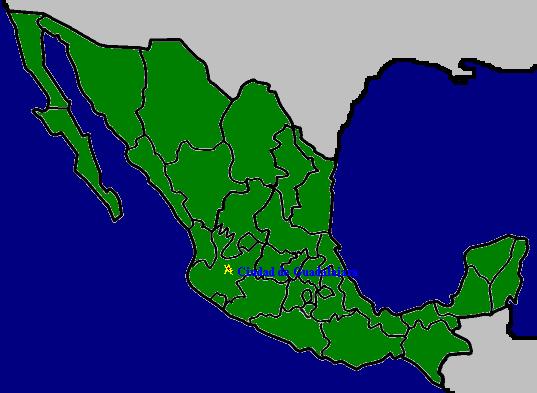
Ubiacacion de guadalajara